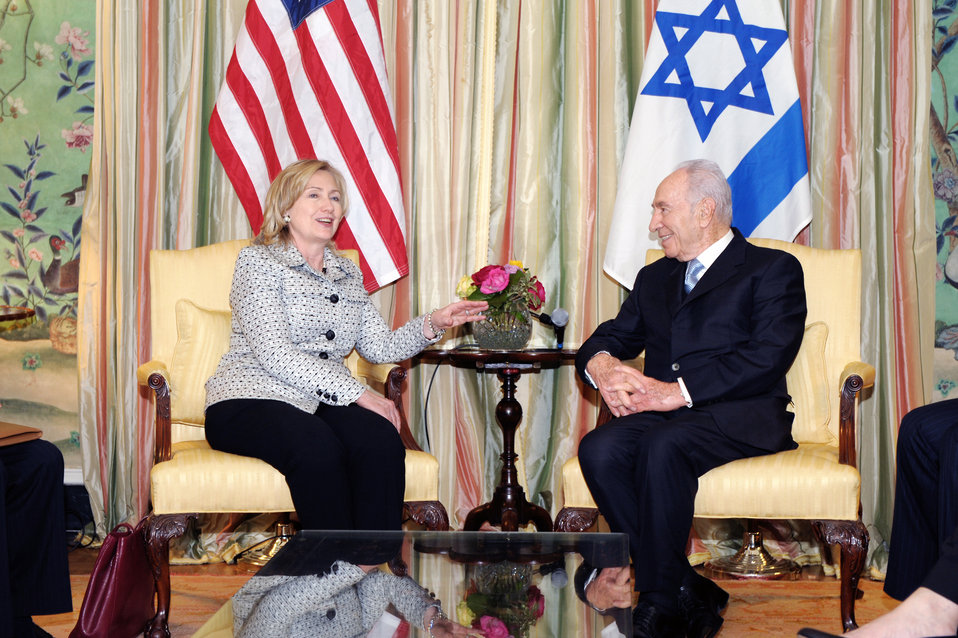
Secretary Clinton Meets With Israeli President Peres

U.S. Secretary of State Hillary Rodham Clinton holds a bilateral meeting with Israeli President Shimon Peres at the Blair House in Washington, D.C., on April 4, 2011.